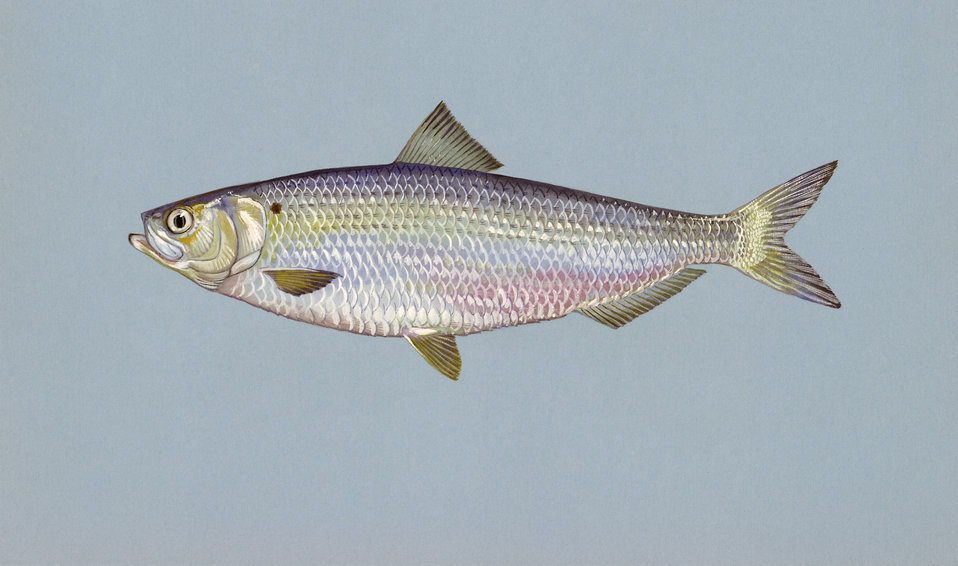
Blueback herring

Scans of artwork commissioned by the Fish and Wildlife Service in the 1970's. Original art is kept at DC Booth Fish Hatchery in Spearfish, SD.